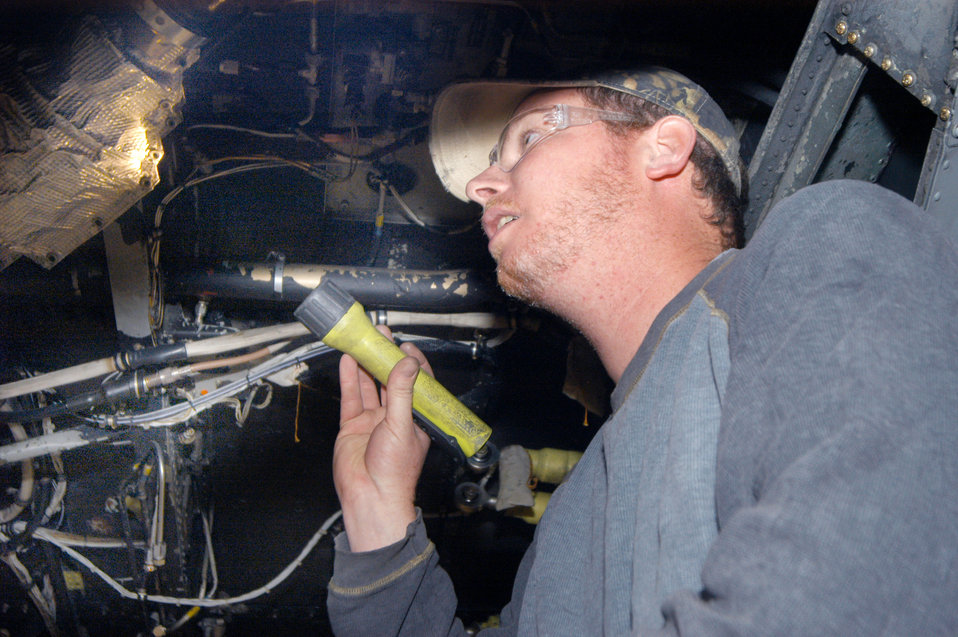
C-130 mechanics beat repair deadline for gunship

Adam Rodgers checks for broken wires and missing clamps on a C-130 Hercules. Mr. Rodgers is a 560th Aircraft Maintenance Squadron aircraft mechanic who helped work on Aircraft 89-0512, which took 27,227 man-hours to repair.